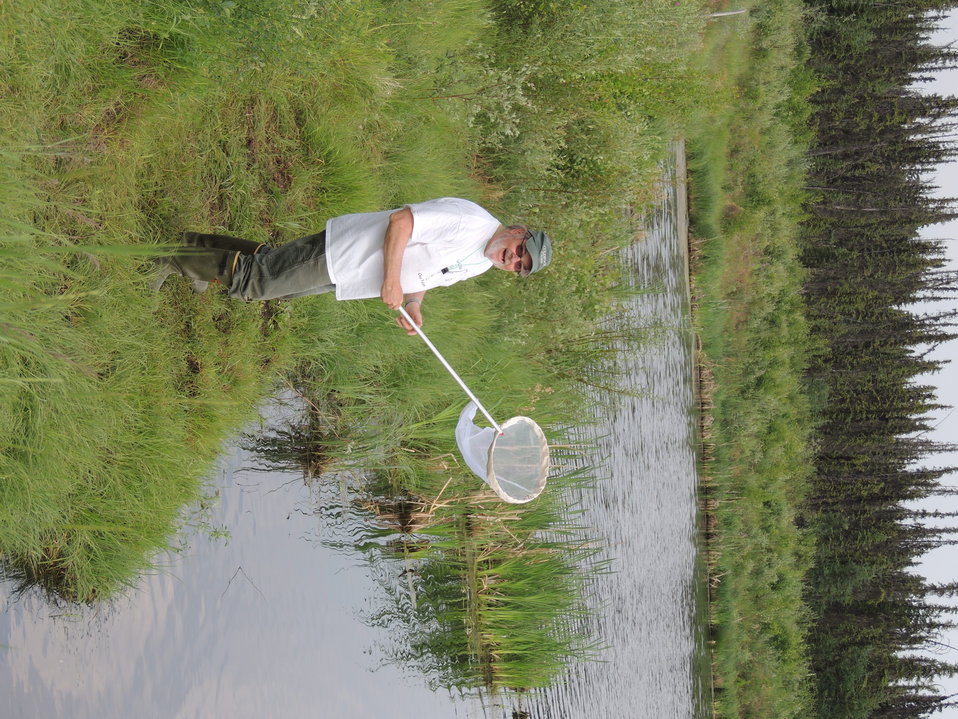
Dragonfly Day 2013

(USFWS)